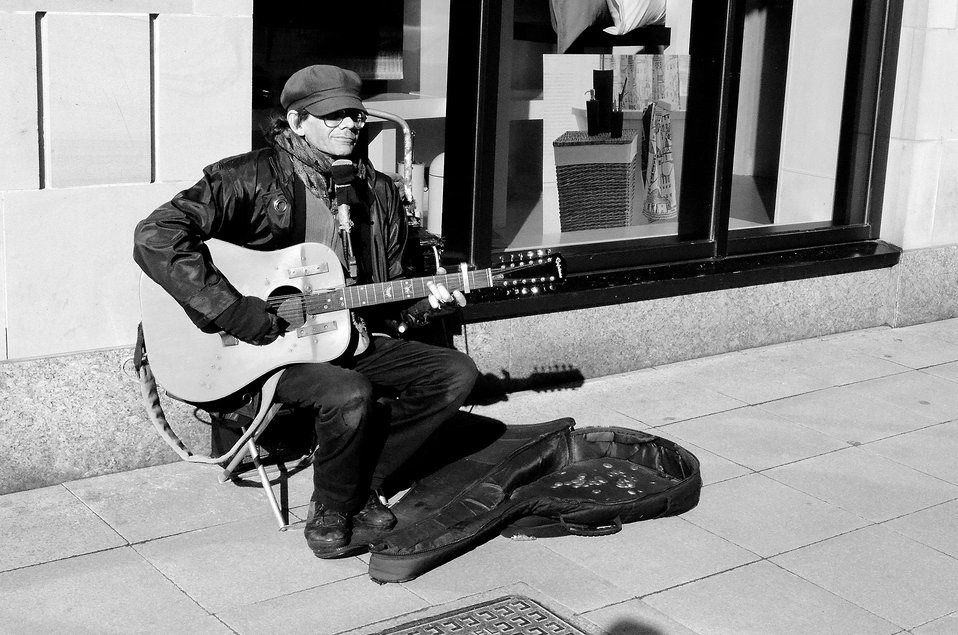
Man playing a guitar.